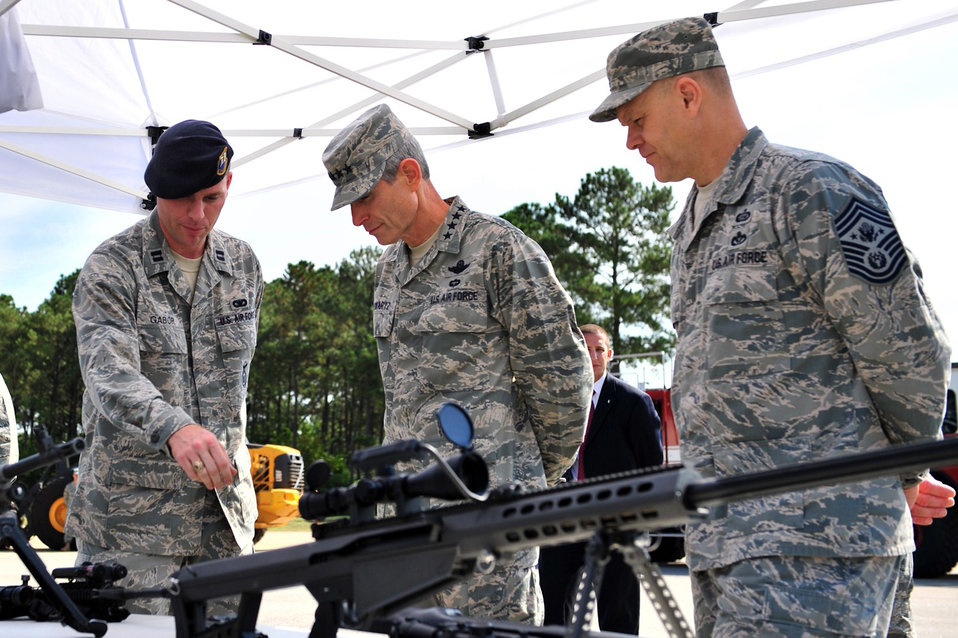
General Schwartz and Chief Roy visit Shaw

Capt. Jeffrey Gabor (left) shows Air Force Chief of Staff Gen. Norton Schwartz (center) and Chief Master Sgt. of the Air Force James A. Roy an overview of the different weapons used by the security forces squadron Sept. 8, 2010, at Shaw Air Force Base, S.C. General Schwartz and Chief Roy visited Shaw AFB to gain insight into the mission and speak with Airmen from units across the base to hear their concerns.